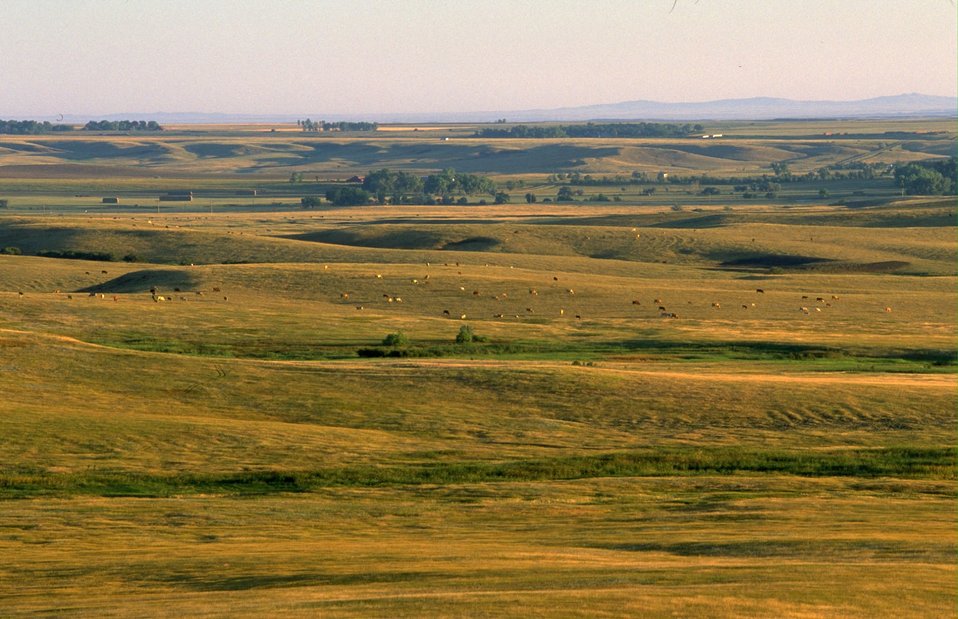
Grassland Vista